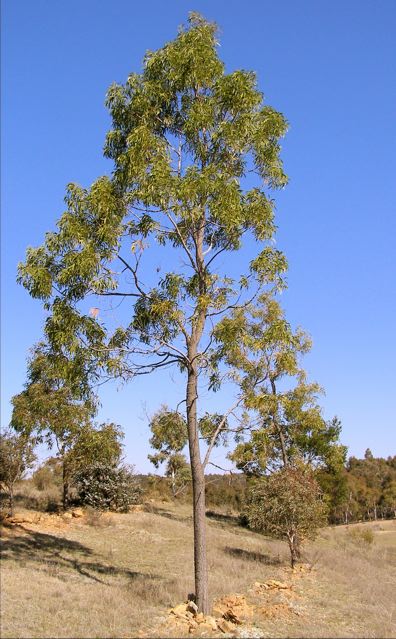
Taken by D.M. Vernon, 2006, Near Canberra